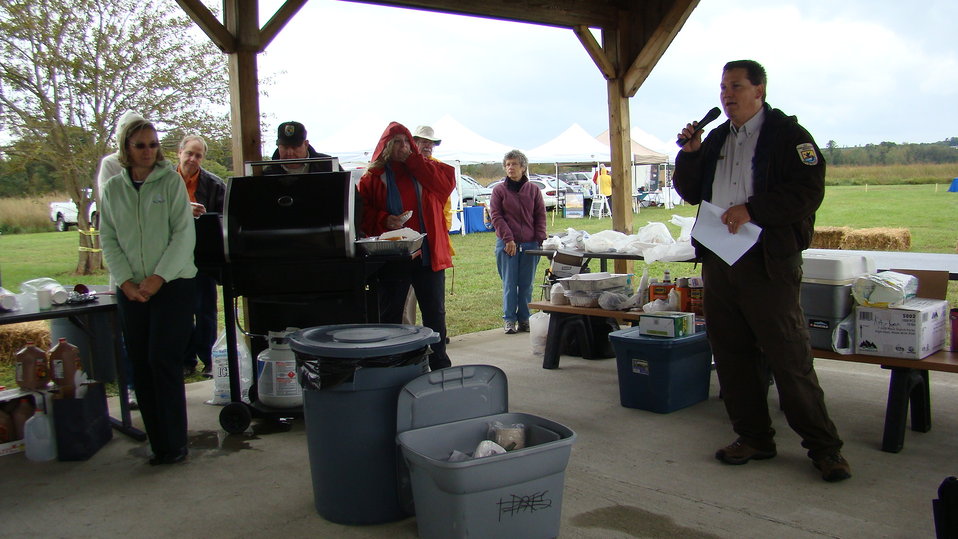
Rappahannock River Valley NWR 15th Anniversary

Refuge Manager Andy Hofmann welcomes attendees to the 'Go Wild!' anniversary celebration.